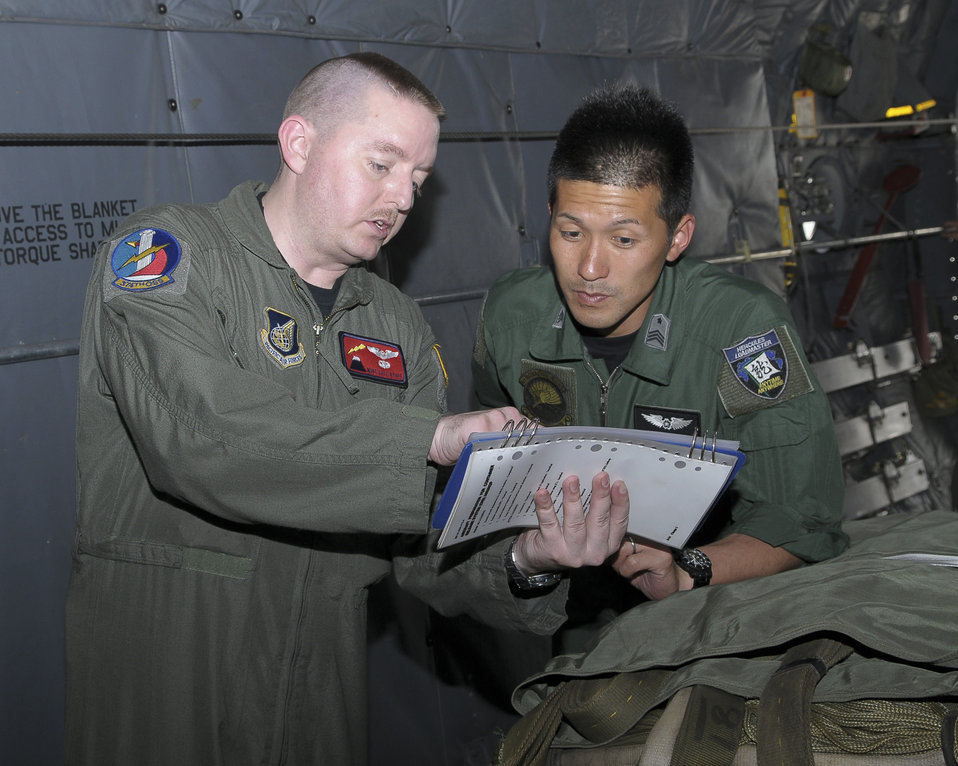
JAI Training

Master Sgt. Dale Nyhus (left) goes through a checklist with Master Sgt. Hioshi Moriyama during Joint Air Delivery Inspection training May 5, 2010, at Yokota Air Base, Japan. Sergeant Nyhus is a 374th Operations Support Squadron joint air delivery inspector and loadmaster. Sergeant Moriyama is a Japan Air Self Defense Force loadmaster.